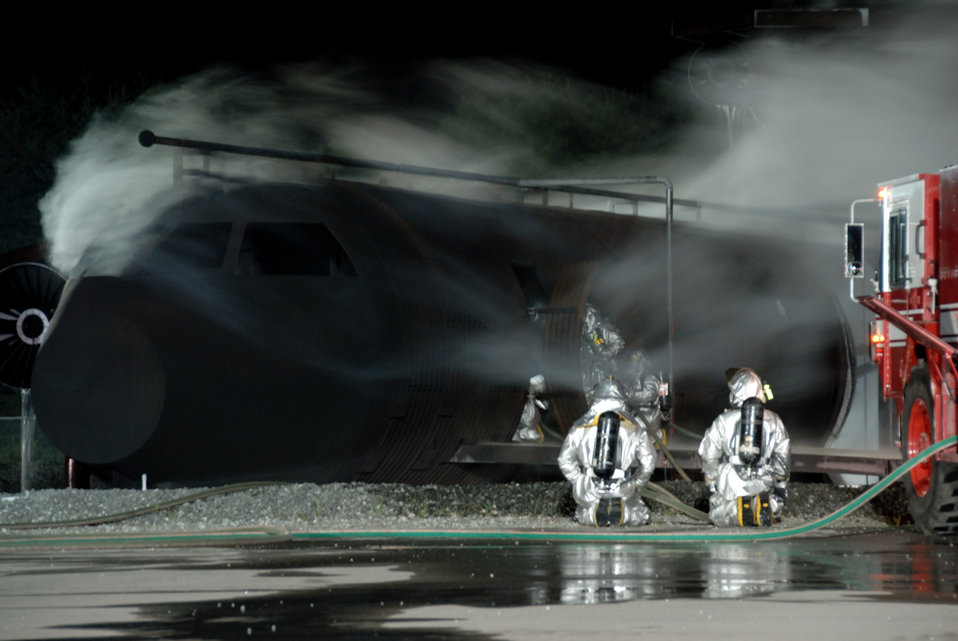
Blazing demonstration

Firefighters from the 35th Civil Engineer Squadron work to put out a blaze on an aircraft fire trainer during Fire Prevention Week Oct. 9 at Misawa Air Base, Japan. The 35th CES fire department members annually demonstrates firefighting procedures for base residents.